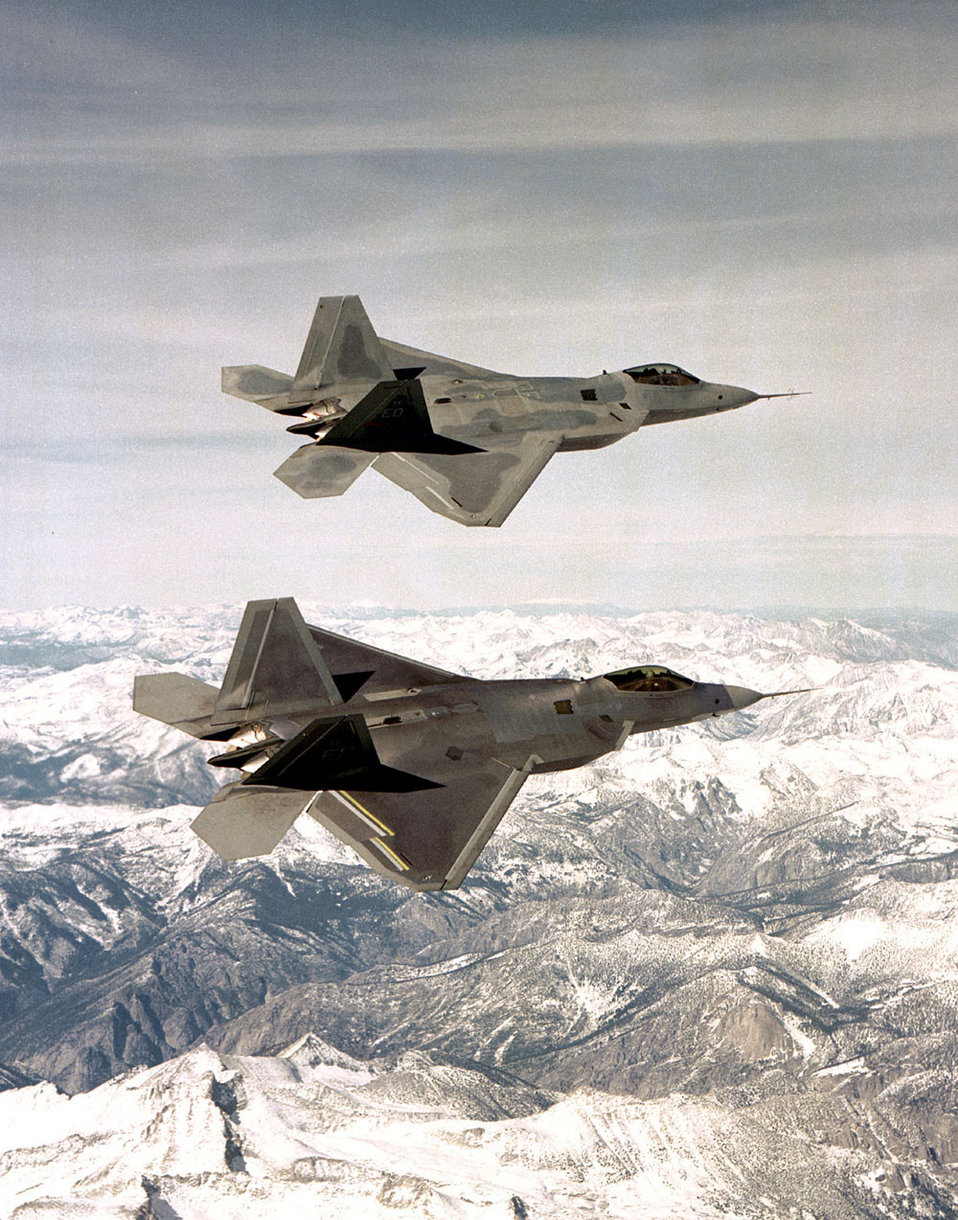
Raptor flight

FILE PHOTO -- The application of advanced avionics software in the F/A-22 is key to the Raptor's revolutionary performance advantage over any other fighter. In the air-to-air arena, the stealthy F/A-22 will be virtually unseen on radar, while its sophisticated array of sensors and advanced radar will allow it to reach out and strike adversary aircraft undetected from long range. The advanced software package will also enhance the Raptor's ability to deliver precision air-to-surface weapons on target, day or night, in any weather.